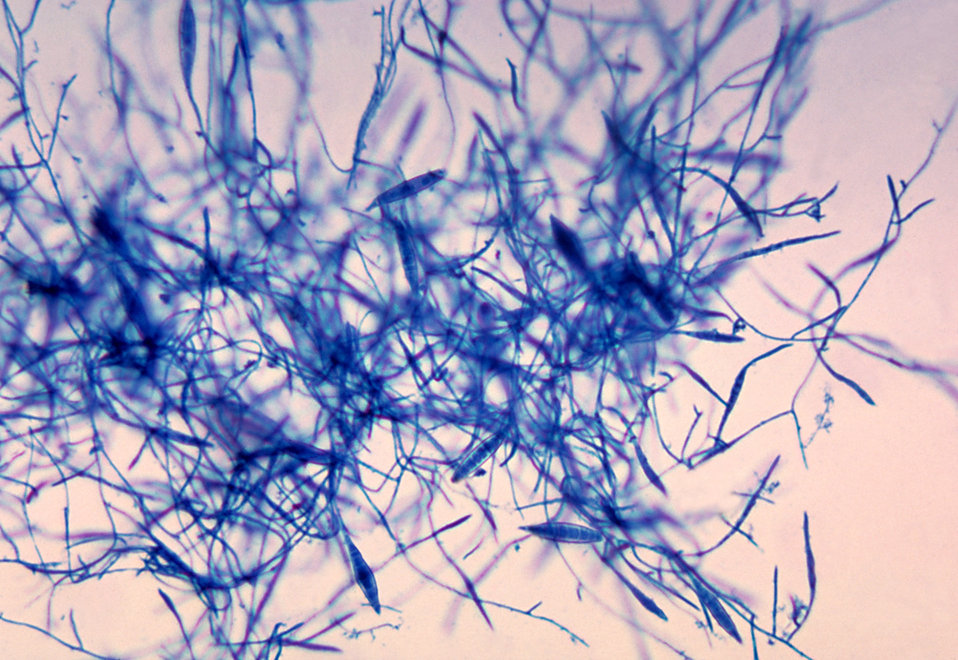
This is a photomicrograph of the fungus Microsporum canis using the lactophenol cotton blue staining technique.